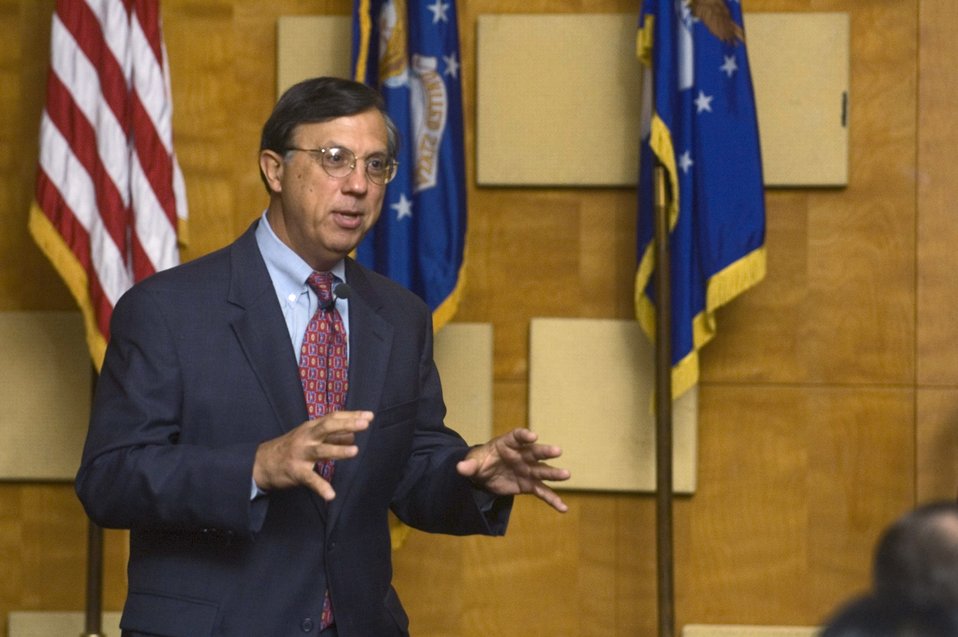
Defense procurement director promotes balanced acquisition

Shay Assad discusses his philosophy of being accountable to the warfighter and taxpayer when dealing with contractors during a town hall meeting with Brooks City-Base contracting members Aug. 16 at Brooks City-Base, Texas. Mr. Assad is the Defense Procurement and Acquisition Policy and Strategic Sourcing director.